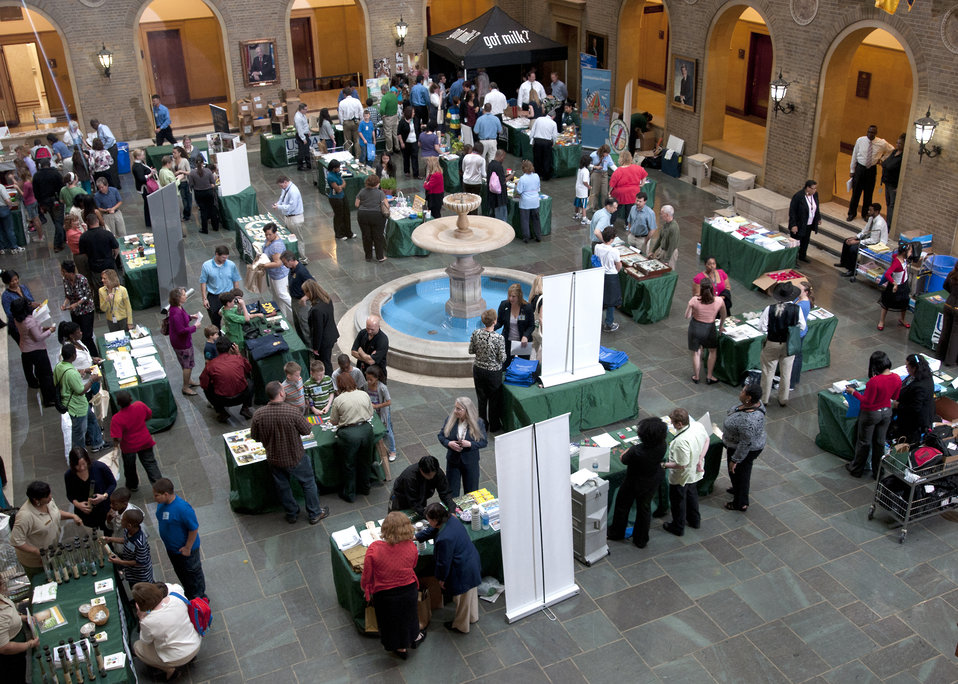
The U. S. Department of Agriculture (USDA) held its annual “Take Your Child to Work Day” on the patio of the Whitten Building, in Washington, DC, on Thursday, April 28, 2011. The program is designed to introduce young people to USDA’s wide range of responsibilities and services.